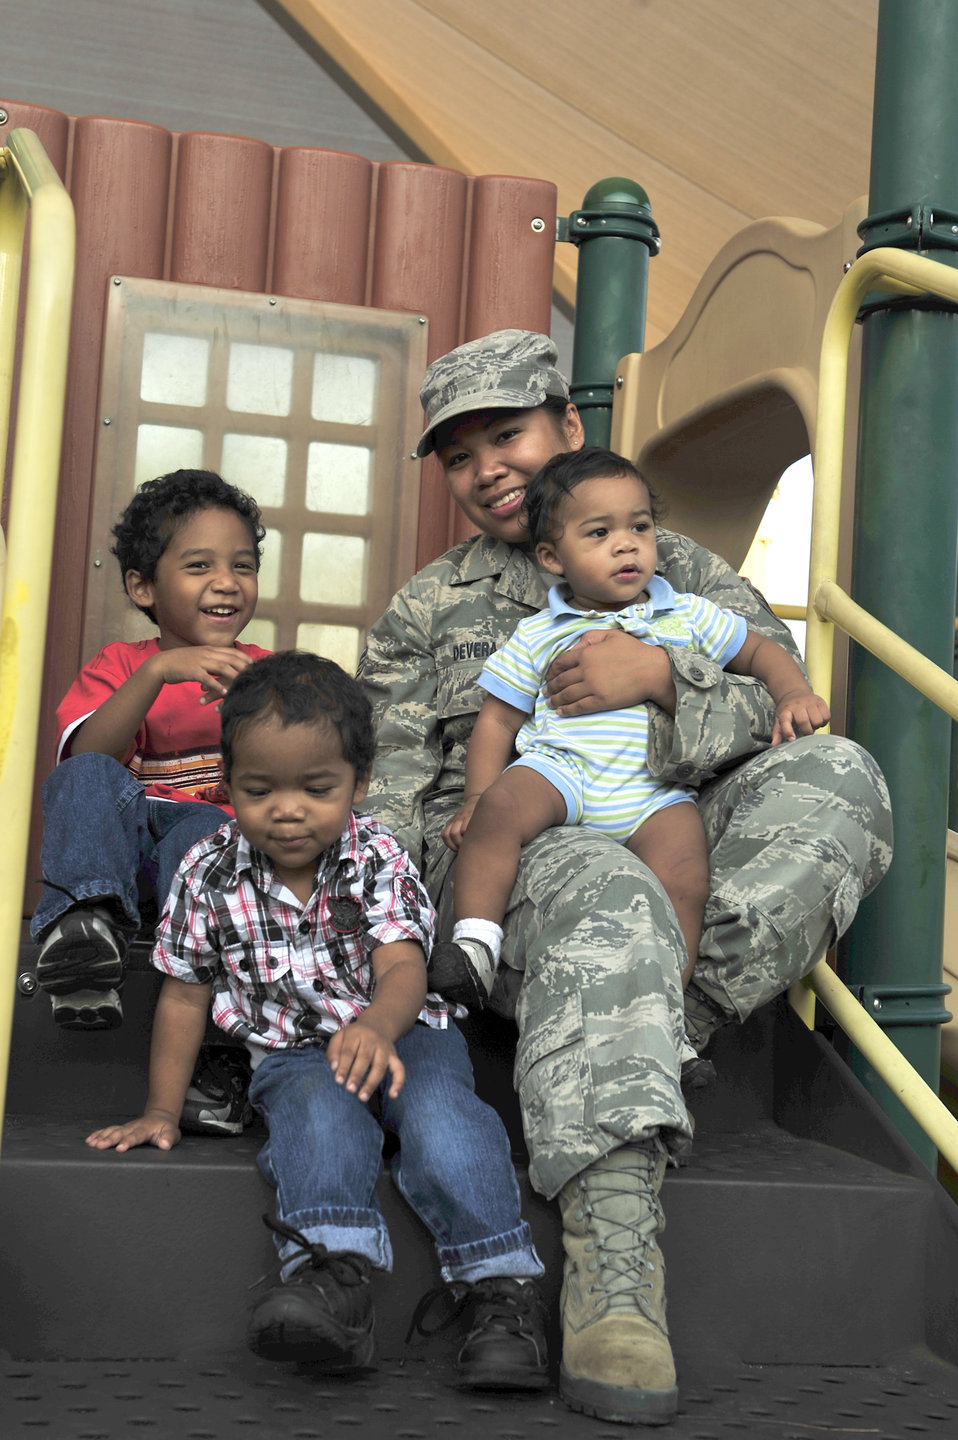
Deploying brings Mother's Day into perspective

Senior Airman Sheila deVera gathers with her three sons, left to right, Brian Jr., Daeshawn, and Jaiden, Sept. 15, 2011, at a playground at Hurlburt Field, Fla. Airman deVera is a photographer assigned to the 1st Special Operations Wing.